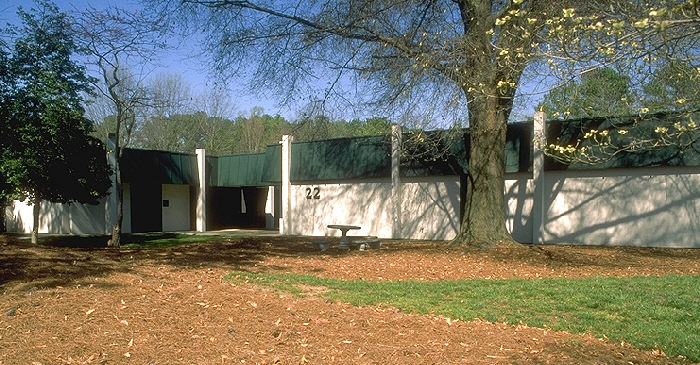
Building 22, Executive Park, CDC.